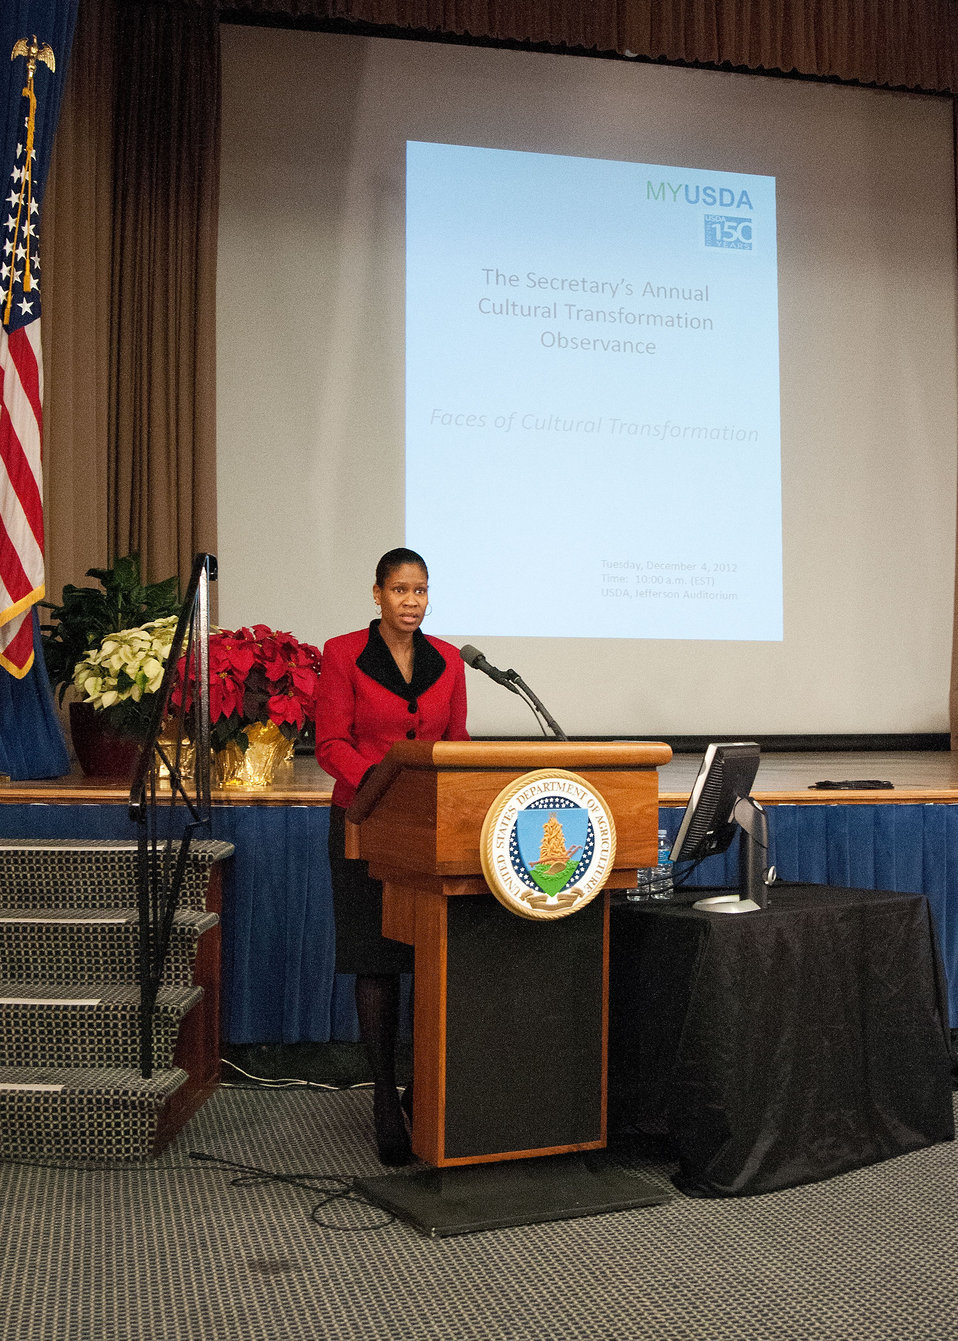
Agriculture Office of Communications Susan Carter is Mistress of Ceremonies at the U.S. Department of Agriculture’s (USDA) Fourth Annual Cultural Transformation event hel in Washington, D.C. on Tuesday, De. 4, 2012. The theme for the event “Faces of Cultural Transformation” Focusing on changing the way we serve our customers and cultural transformation’s benefits to employees.